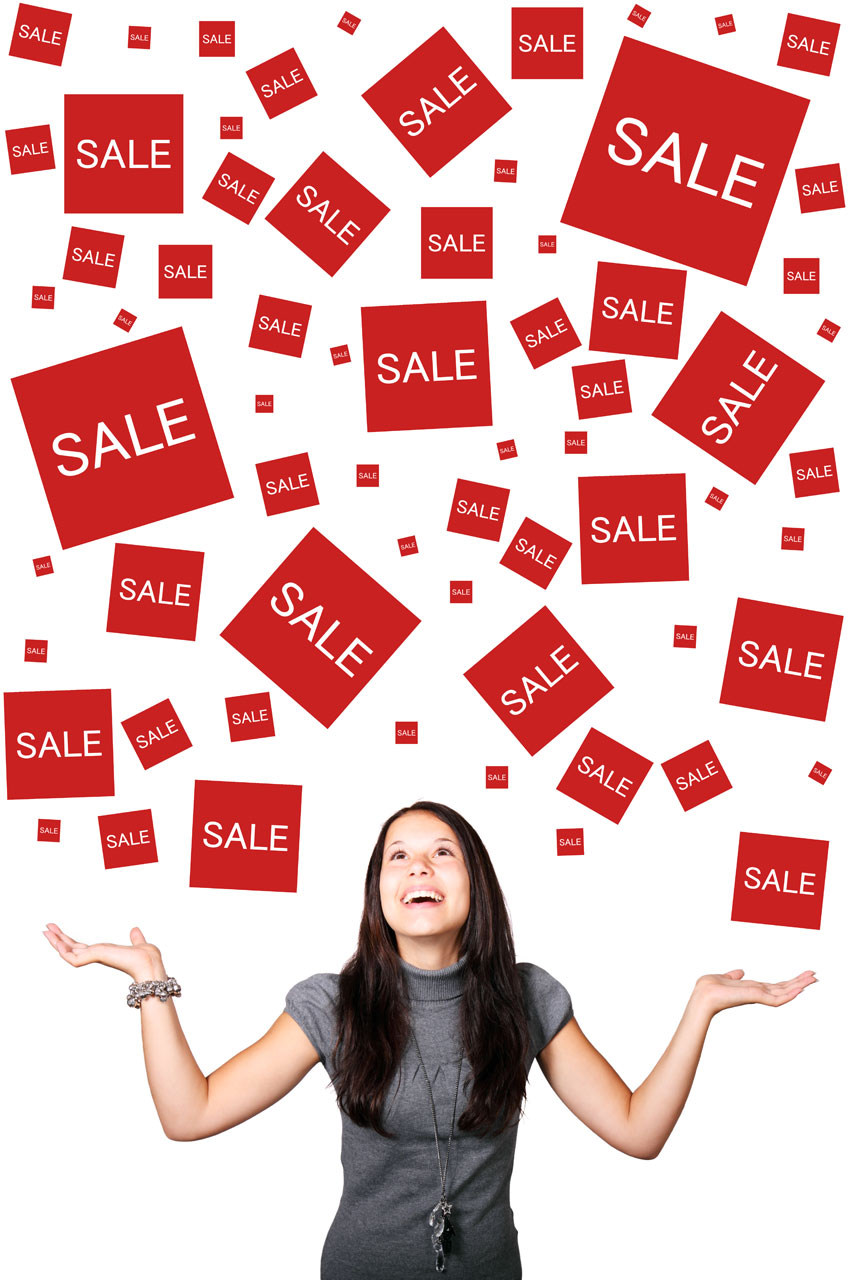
Woman enjoying sales

Young woman looking forward to sales.